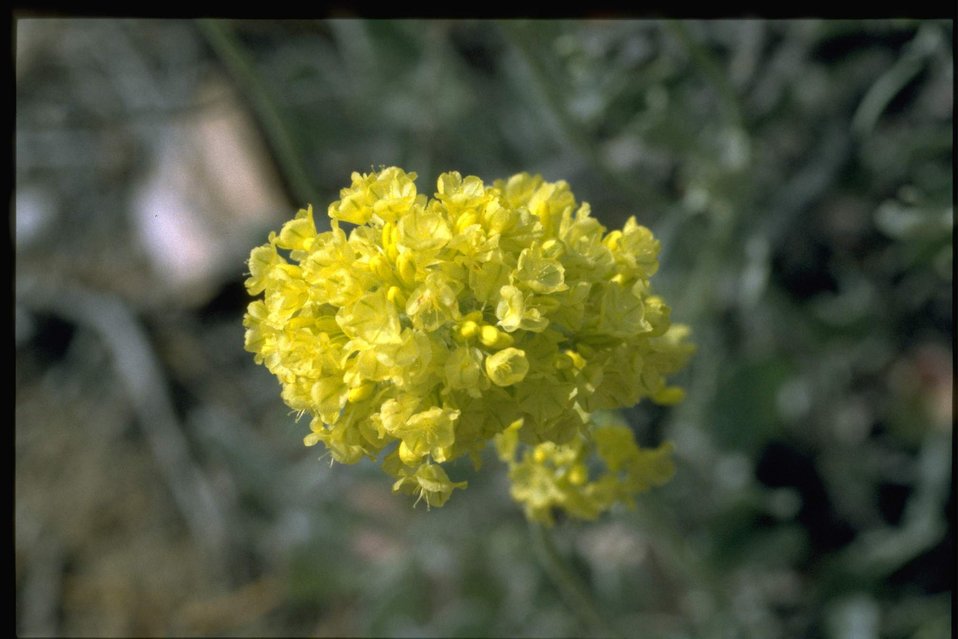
Closeup shot of buckwheat wildflower.